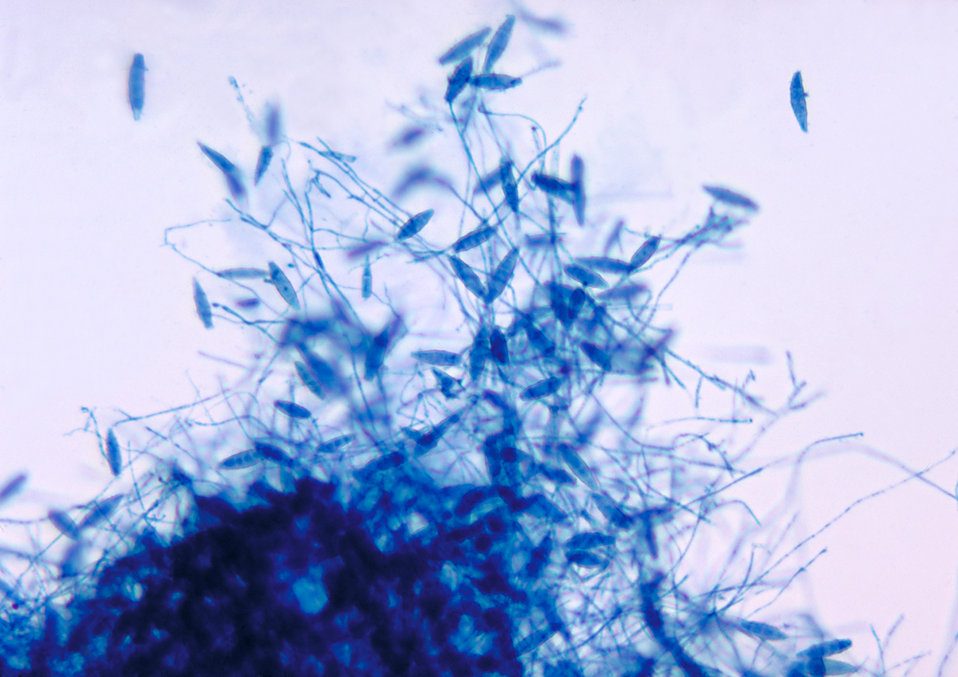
This is a photomicrograph of the fungus Microsporum gypseum using the lactophenol cotton blue staining technique.